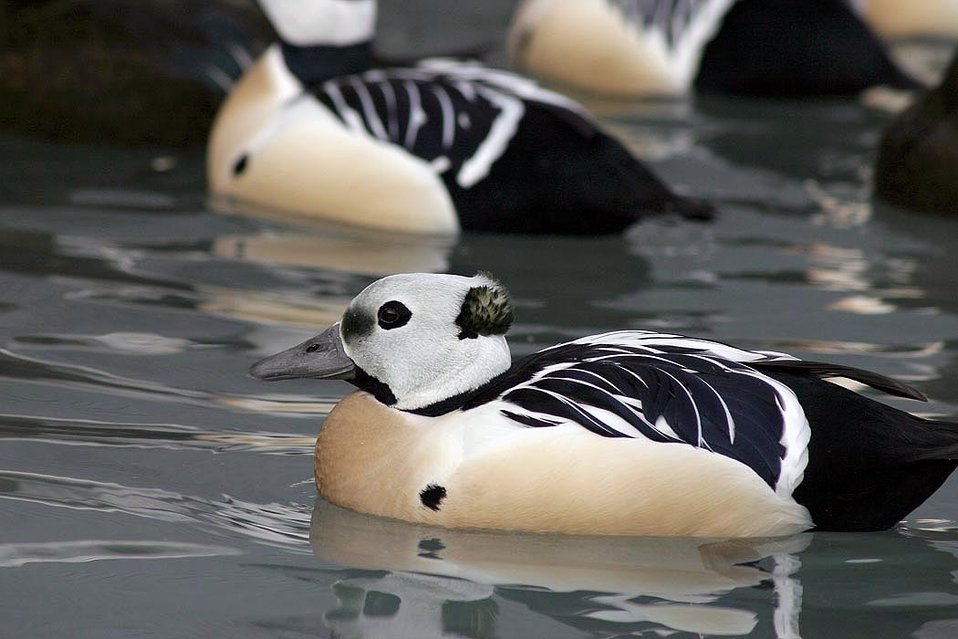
Threatened Steller's eider (Polysticta stelleri) males, Alaska SeaLife Center, Seward, Alaska